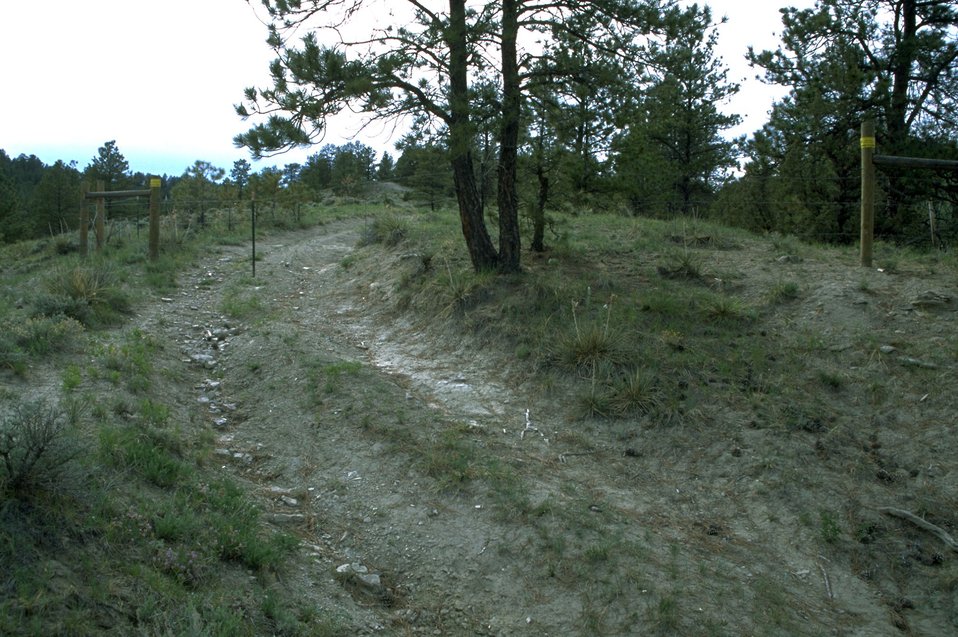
Closed road in the Acton Recreation Area